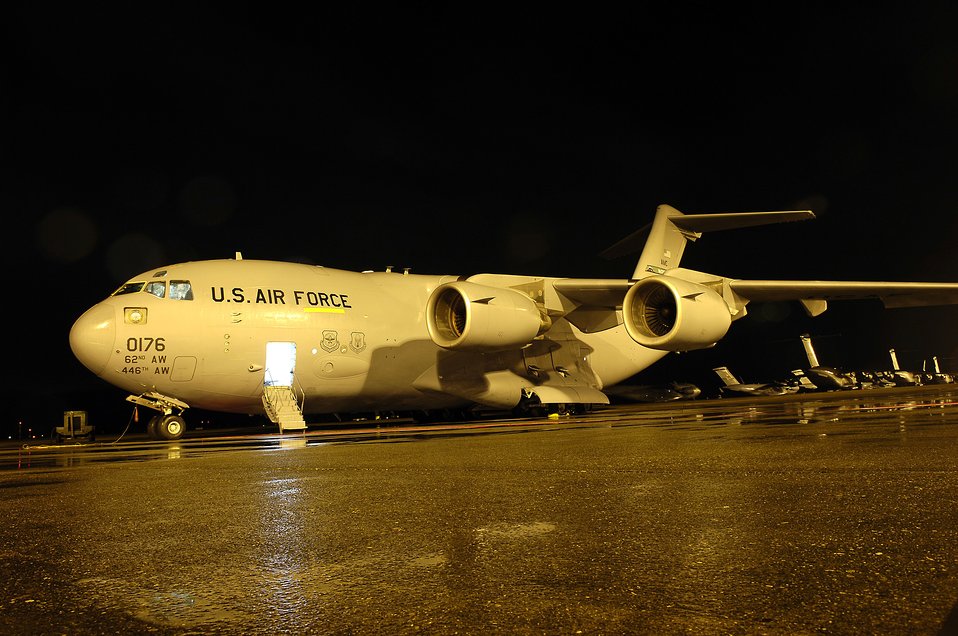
Flying green!

This C-17 Globemaster III, sitting on the ramp at McChord AFB, Wash., made an historic transcontinental flight Dec. 17, flying to McGuire AFB, N.J., using a blend of regular aviation and synthetic fuel.